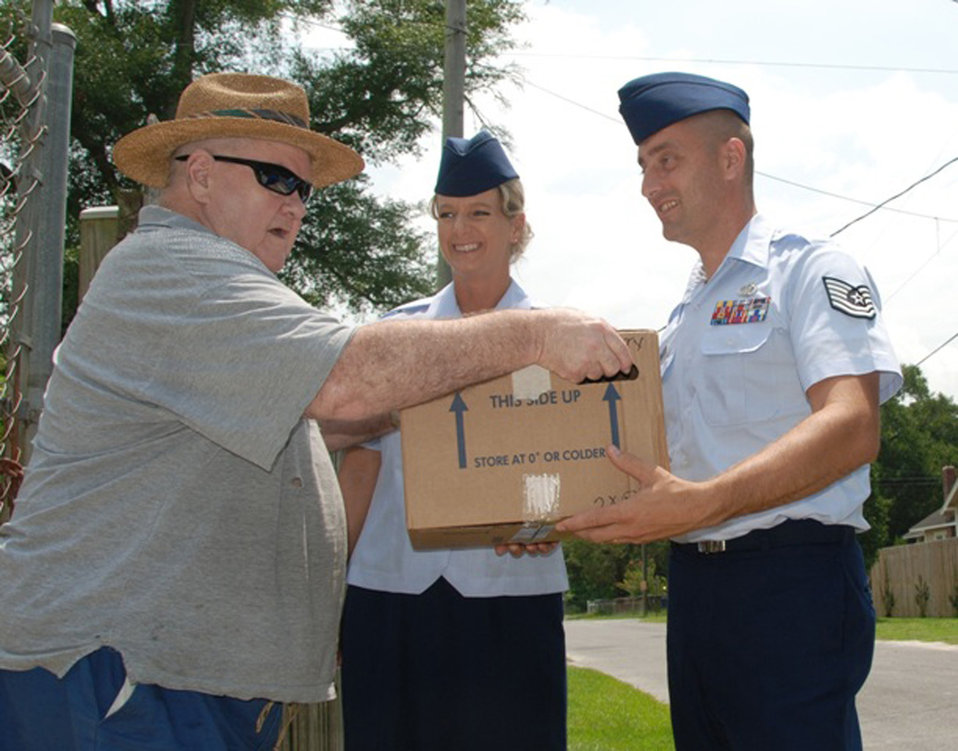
Tyndall Airmen participate in Meals on Wheels program

Master Sgt. Wendy Gehri and Tech. Sgt. Joe Ezell, members of the 601st Air and Space Operations Center at Tyndall Air Force Base, Fla., deliver meals to Mr. Edwin Terry as part of the local Bay County Council on Aging Meals on Wheels program.